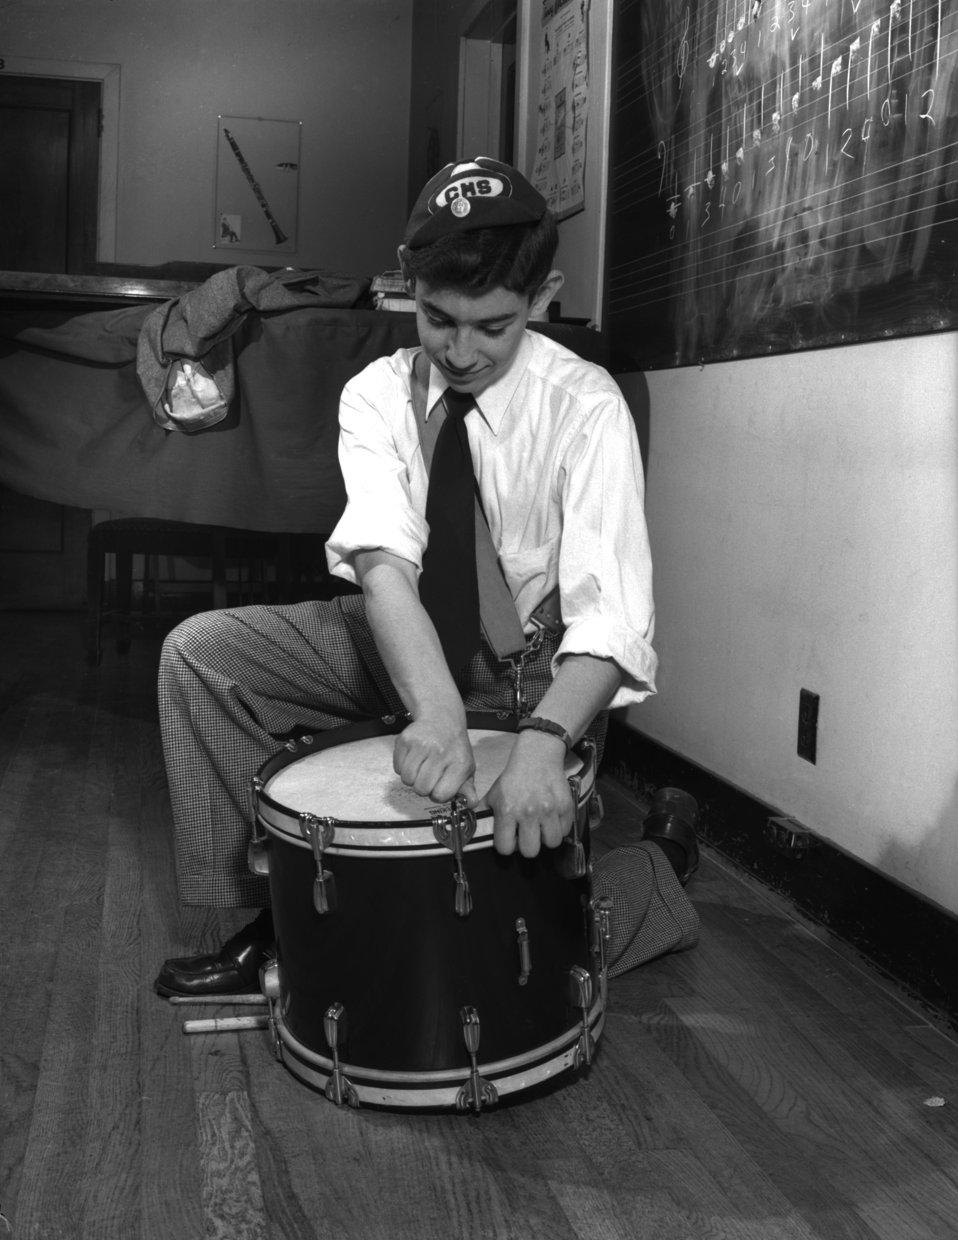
Tennessee State Band Festival Oak Ridge

004500-8j DOE photo by Ed Westcott

Tennessee State Band Festival Oak Ridge Tennessee 4/29/1948